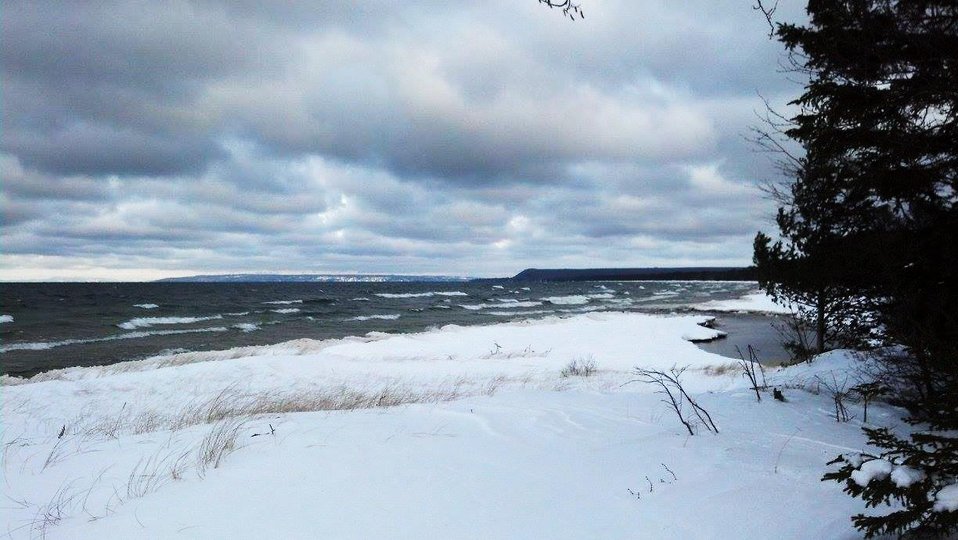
Winter at the mouth of the creek